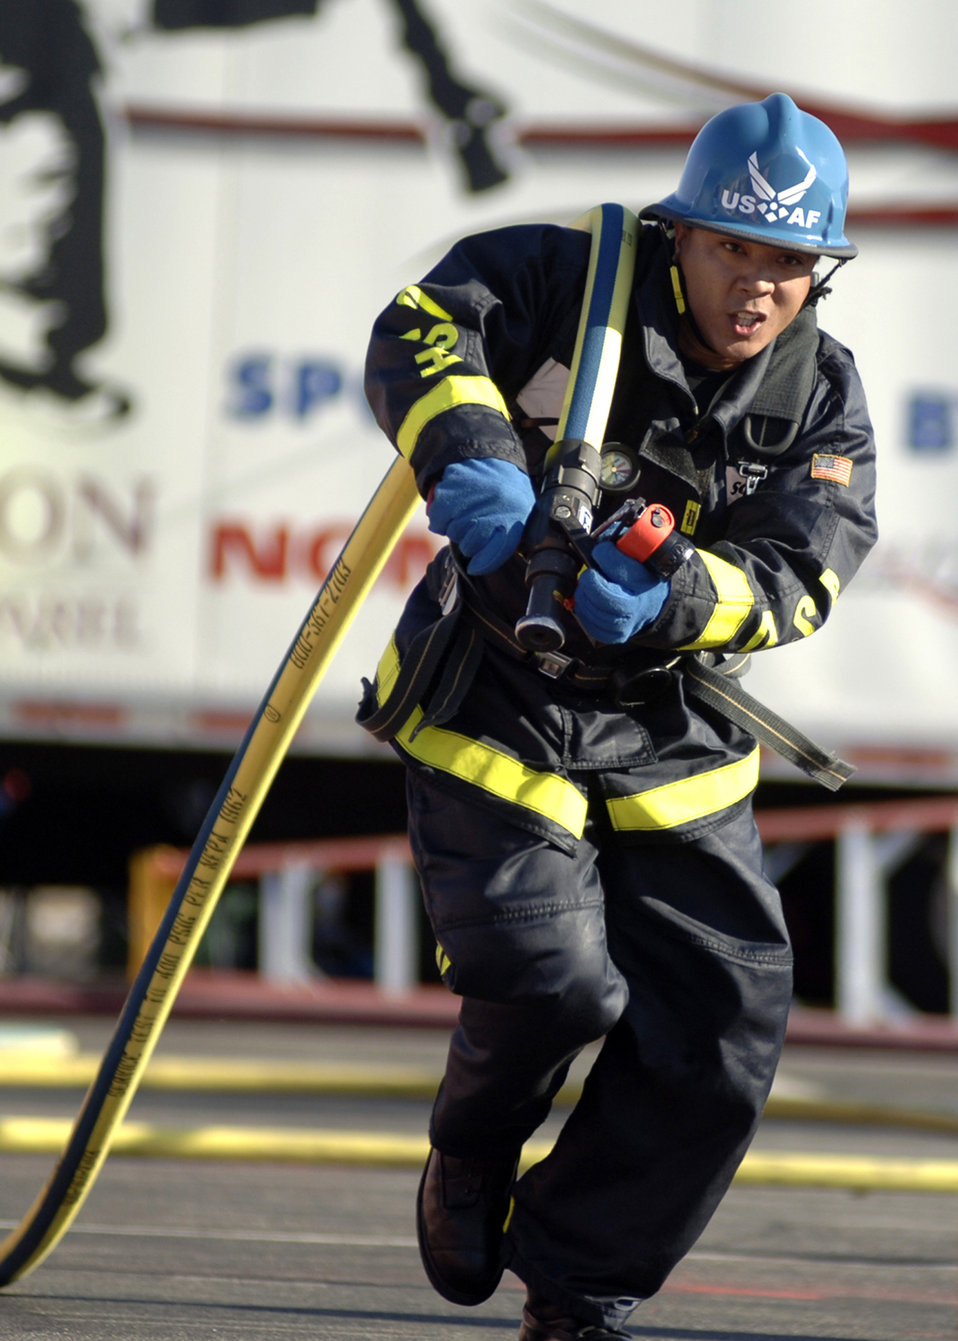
What a Drag

Aldrico Caragan, Team Travis, drags a fire hose 100 feet during the Firefighter Combat Competition at Morrow, Ga., Oct. 13, 2006.